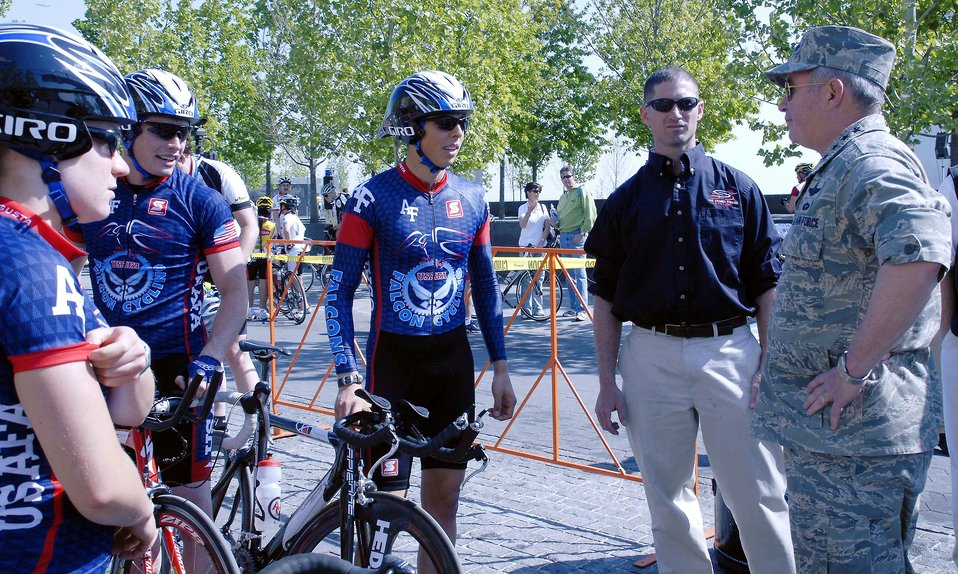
Air Force participates in pro cycling event

Gen. Duncan J. McNabb greets members of the U.S. Air Force Academy collegiate cycling team at the U.S. Air Force Cycling Classic held May 4 in Arlington, Va. Proceeds from the event, which featured both amateur and professional cyclists, will benefit U.S. military members who suffer from traumatic brain injuries. General McNabb is the Air Force vice chief of staff.